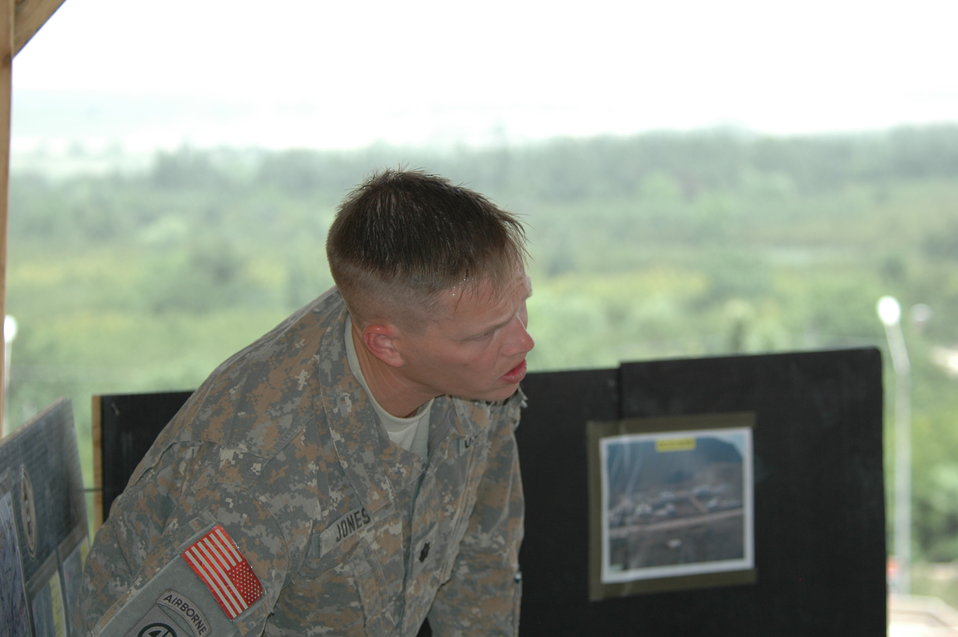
CODEL Berman